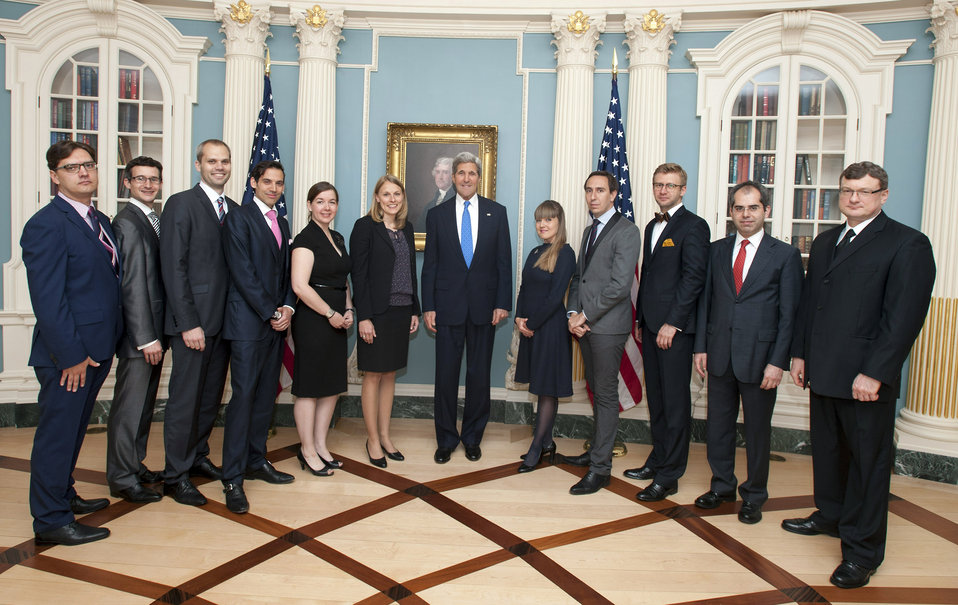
Secretary Kerry Poses for a Photo With the Transatlantic Diplomatic Fellows

U.S. Secretary of State John Kerry poses for a photo with the Transatlantic Diplomatic Fellows at the U.S. Department of State in Washington, D.C., on April 29, 2014.